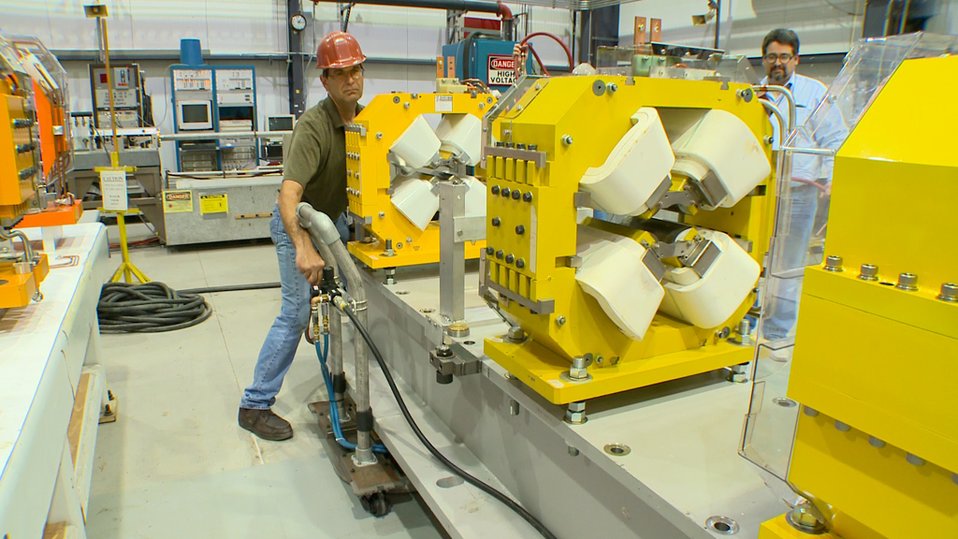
Staff of BNL National Synchrotron Light Source II completed a preliminary test - the project's critical design issues - determine how closely the magnets stay aligned when they are moved from their assembly point -NSLS II tunnel.
The results confirm that the magnets' high precision alignment would survive the process of transporting and installing and fixing the girders to the ground in the tunnel.